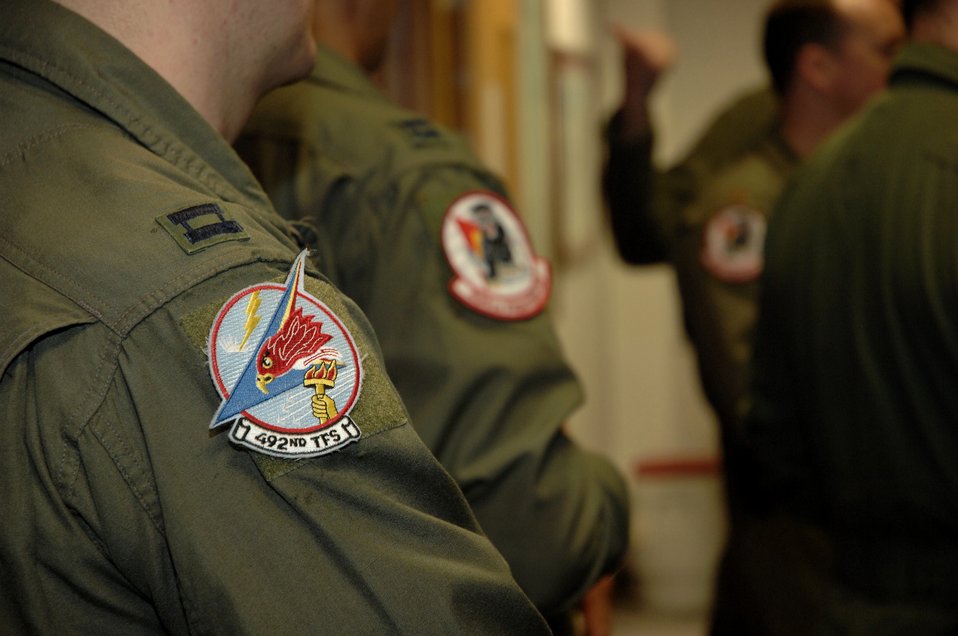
Odyssey Dawn

492nd and 494th Fighter Squadron F-15E Strike Eagle crew receive a step brief to their departure from RAF Lakenheath, England, March 19, 2011. Units from the 48th Fighter Wing are currently conducting pre-deployment procedures in support of Operation Odyssey Dawn. The 48th Fighter Wing provides all-weather, day or night air superiority and air-to-ground precision combat capability as well as combat search and rescue.